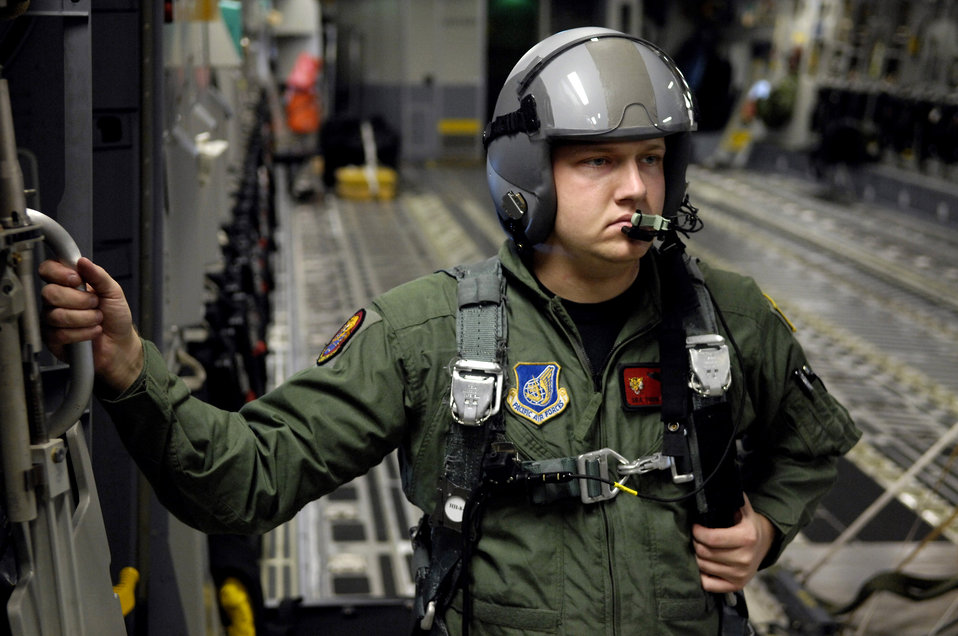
Hickam Airmen conduct 4-ship C-17 airdrop training

Senior Airman Todd Tichawa waits to open the ramp door to a C-17 Globemaster III during a four-ship, airdrop training mission Aug. 13 over the island of Oahu, Hawaii. Airman Tichawa, a loadmaster with the 535th Airlift Squadron from Hickam Air Force Base, Hawaii, is taking part in the training to maintain currency and proficiency.